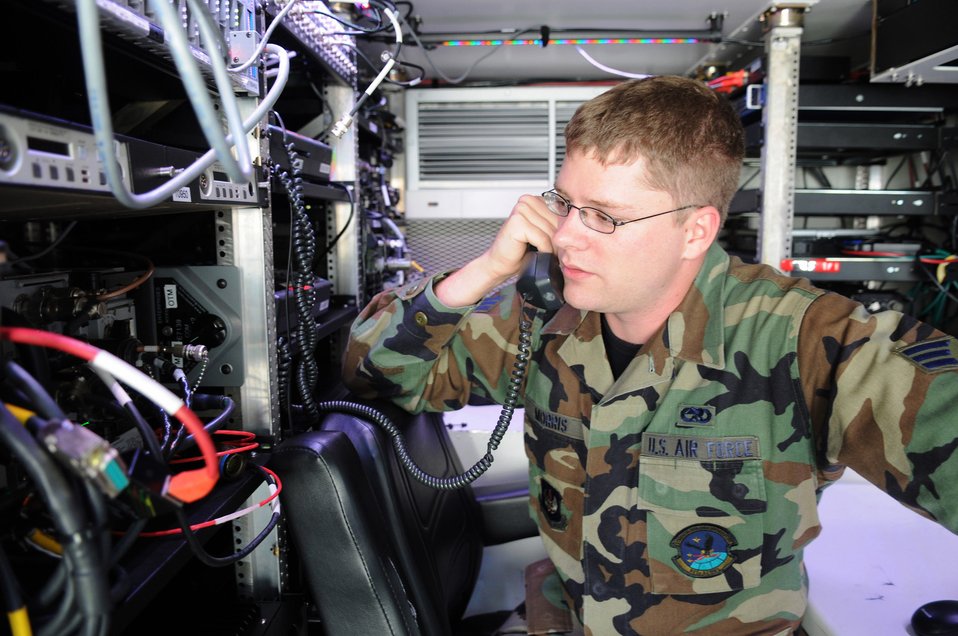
Tiger team improves C2

Senior Airman Keith Morris tests equipment in a ground mobile gateway used by the E-3 Sentry airborne warning and control system aircraft. Currently, warfighting command and control faces challenges with reduced manning, outdated equipment and constrained budget resources to draw from for recapitalization and modernization purposes. A tiger team has been formed to assess areas most in need of improvement, and is prioritizing what changes need to be made first. Airman Morris is a ground radio maintenance technician with the 603rd Air and Space Communication Squadron at Ramstein Air Base, Germany.